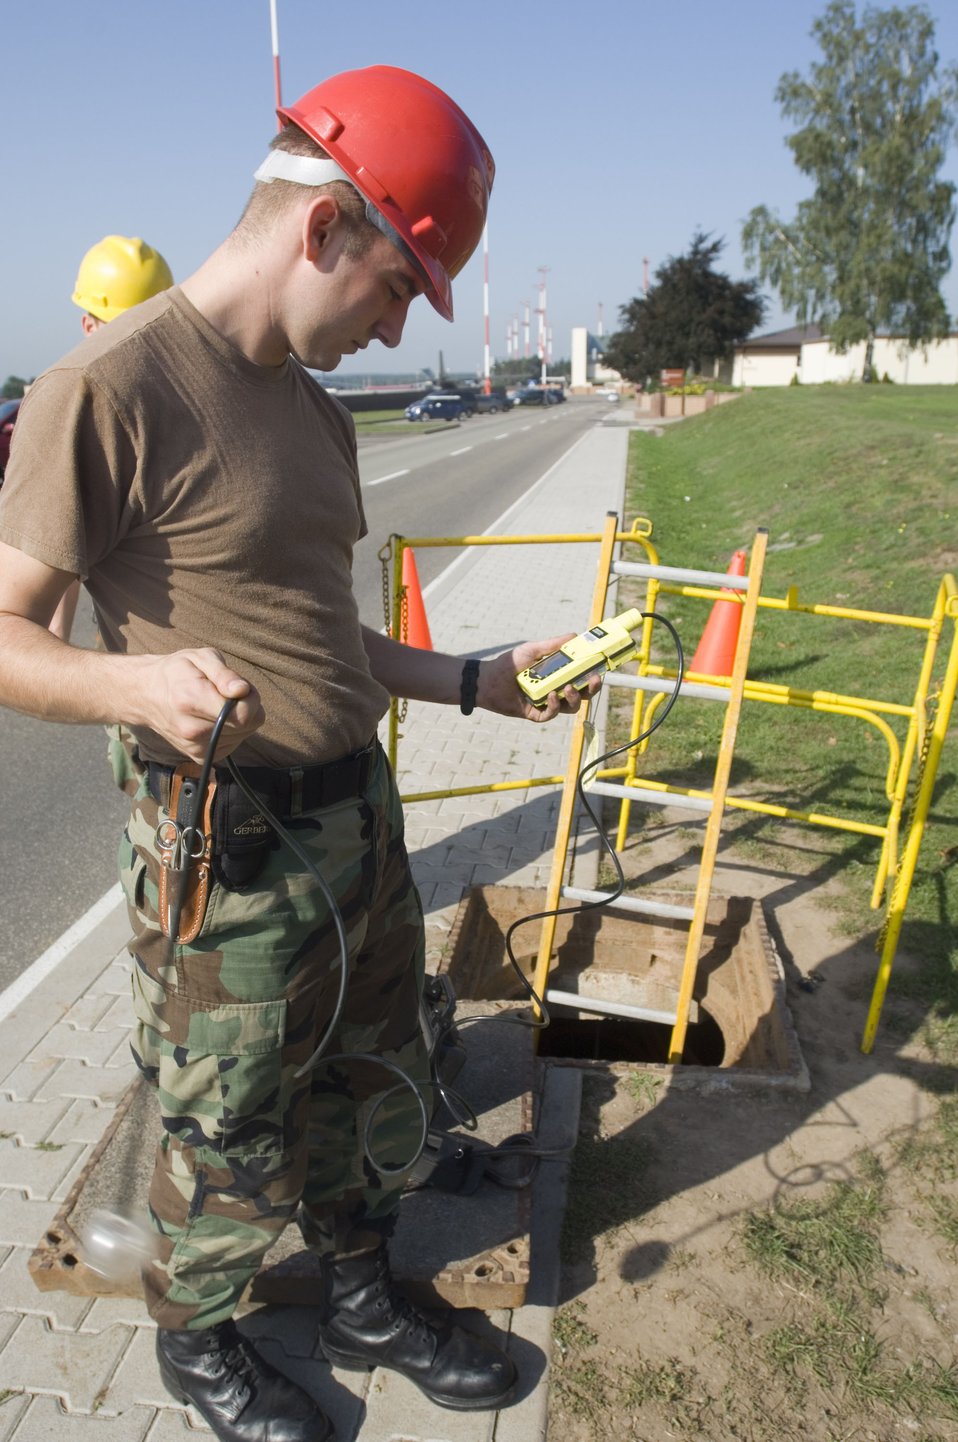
Down a manhole

Airman 1st Class Jeremi Welborn zeroes the gas detector before placing it into a manhole at Ramstein Air Base, Germany, Sept. 11. Airman Welborn is a cable maintainer with Ramstein's 435th Communications Squadron.